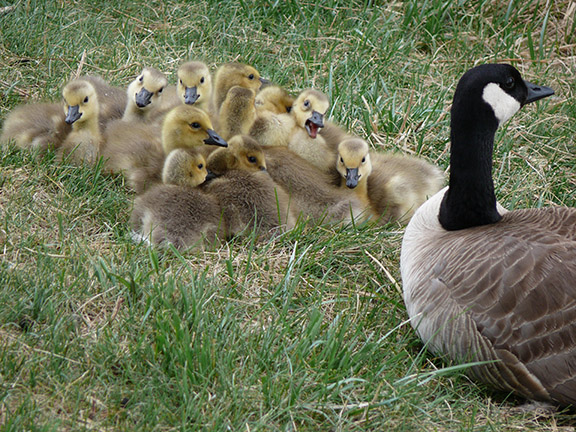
A Gaggle of Goslings

A pile of goslings group up on the National Elk Refuge Visitor Center lawn under the watchful eye of their mother.

Credit: USFWS / National Elk Refuge volunteer